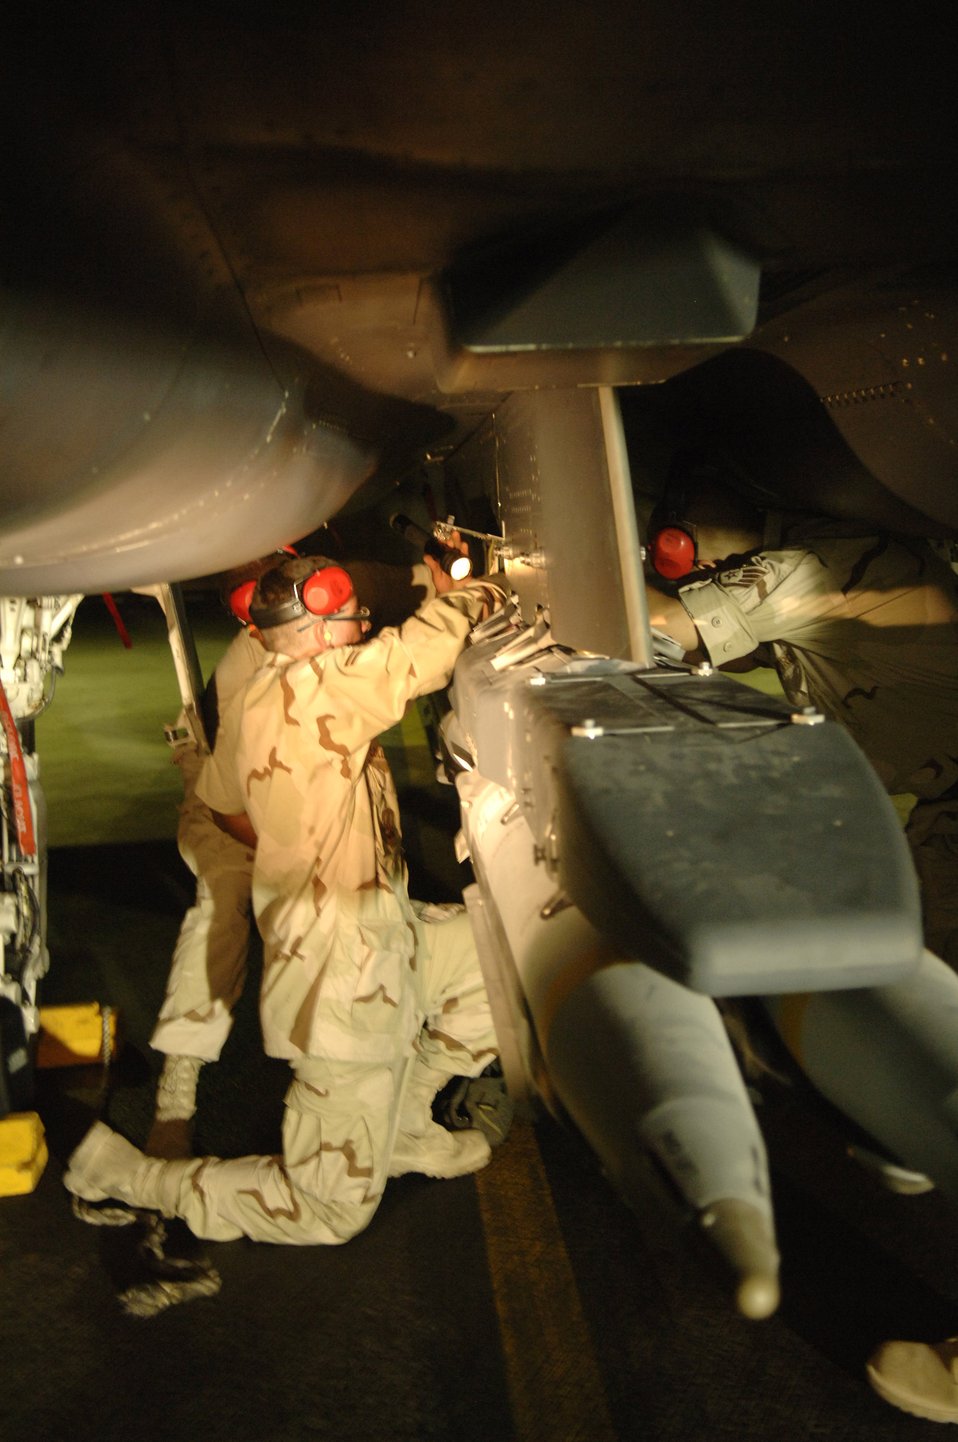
New weapon makes job of munitions specialists a 'snap'

F-15E Strike Eagle weapons loaders with the 379th Expeditionary Aircraft Maintenance Squadron secure a weapons carriage containing four GBU-39/B small diameter bombs to the underside of the aircraft before it flies the first sortie carrying the new munition into combat. The Airmen are deployed from Royal Air Force Lakenheath, England.